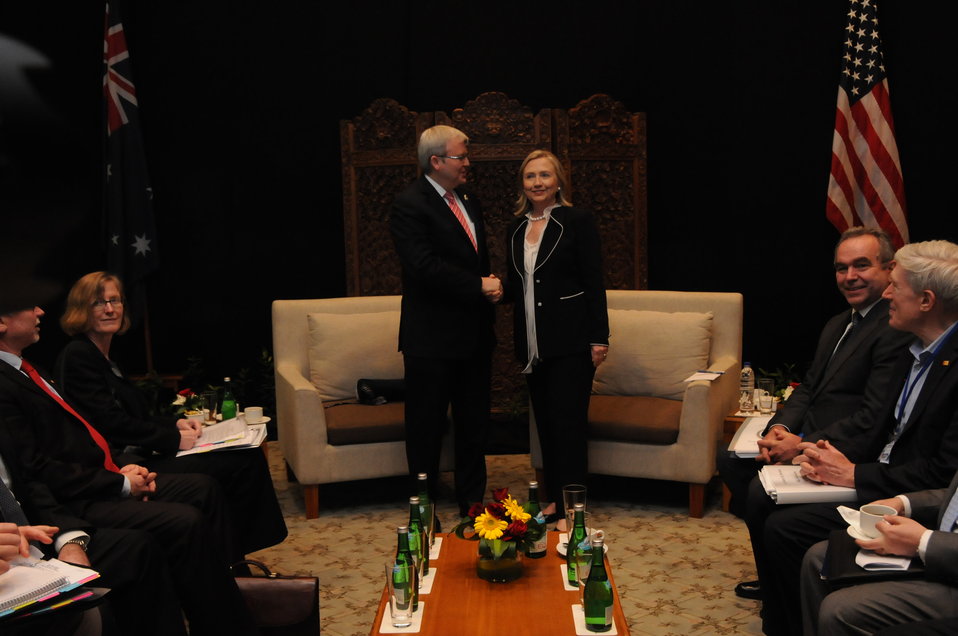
Secretary Clinton Shakes Hands With Australian Foreign Minister Rudd

U.S. Secretary of State Hillary Clinton shakes hands with Australian Foreign Minister Kevin Rudd after their bilateral meeting in Bali, Indonesia, on July 22, 2011. Seated on the left is Australian Ambassador to ASEAN Gillian Bird, and seated on the right are U.S. Assistant Secretary of State for East Asian and Pacific Affairs Kurt Campbell and U.S. Under Secretary of State for Economic, Energy and Business Affairs Robert Hormats.